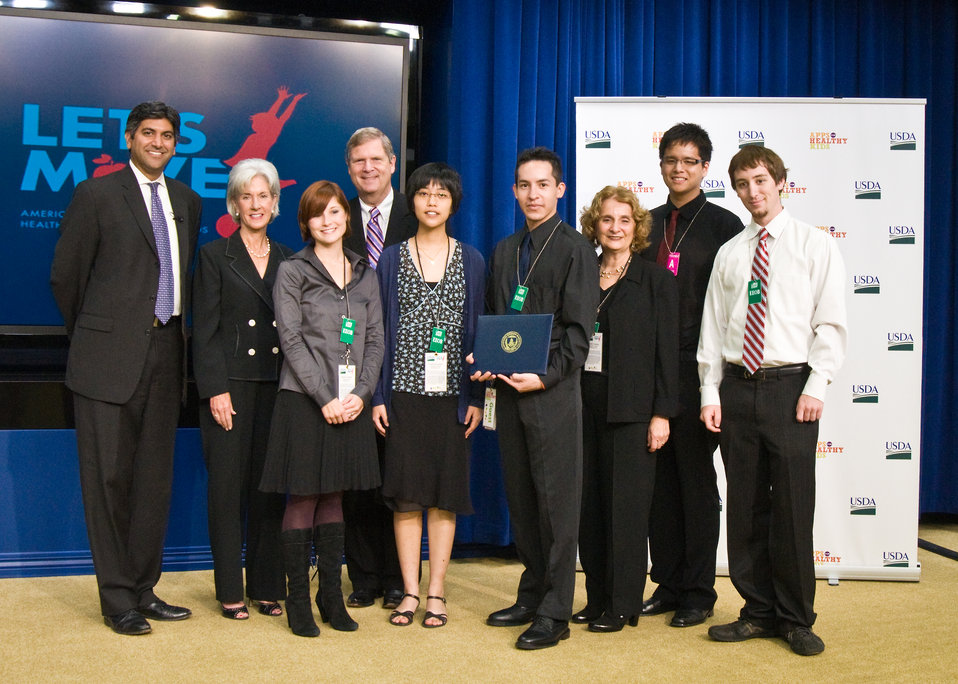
Aneesh Chopra, White House Chief Technology Officer, Health and Human Services Secretary Kathleen Sebelius and Agriculture Secretary Tom Vilsack present First Prize to David Villatoro, North Hills, California and a team of developers from the University of Southern California of the game 'Trainer,' of The Apps for Healthy Kids competition at the White House, in Washington, DC, on Wednesday, September 29, 2010. This team also won the GE Healthymagination Student Awards. The Apps for Healthy Kids competition is part of First Lady Michelle Obama’s Let’s Move campaign to end childhood obesity within a generation. The competition challenges software developers, game designers, students and other innovators to develop fun and engaging software tools and games to urge children, especially “tweens” (children ages 9-12) – directly or through their parents – to eat better and be more physically active. Trainer gives players the responsibility of caring for creatures who all have dietary and fitness needs. Unlike any other title currently on the market, the player actually trains with creatures. When one of the creature exercises, so does the Player! Both benefit from this shared activity. USDA Photo 10di1506-158 by Bob Nichols.